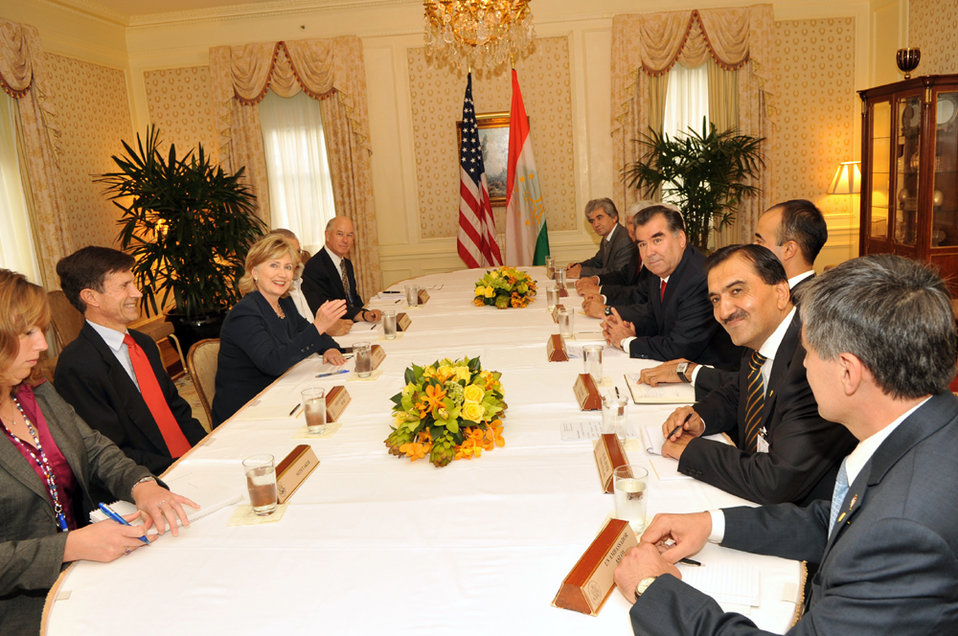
UNGA 2009: Secretary Clinton Meets With Tajikistan President

U.S. Secretary of State Hillary Rodham Clinton meets with Tajikistan President Emomali Rahmon at the Waldorf Astoria hotel during the 64th Session of the UN General Assembly in New York City, New York September 24, 2009.